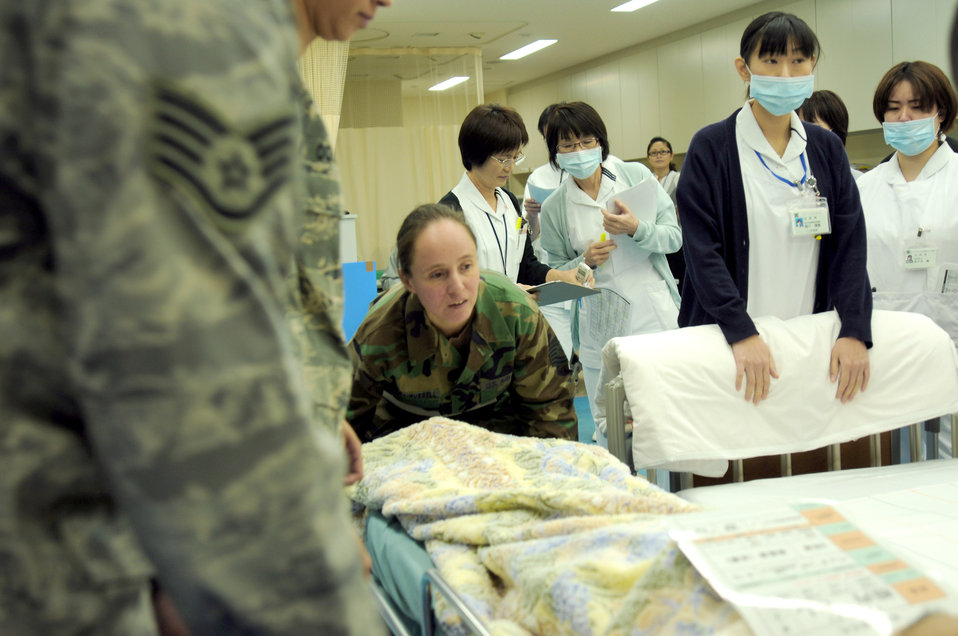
Hospital PB

A 35th Medical Group Airman prepares to move a patient from stretcher to bed Nov. 5, 2010, at the new Misawa City Hospital. Misawa officials opened the new hospital last week and requested military assistance in transporting patients from the old hospital to the new building. More than 20 service members from Naval Air Facility Misawa and the 35th Medical Group assisted with the transfer. U.S. Navy photo by Mass Communication Specialist 2nd Class Matthew M. Bradley